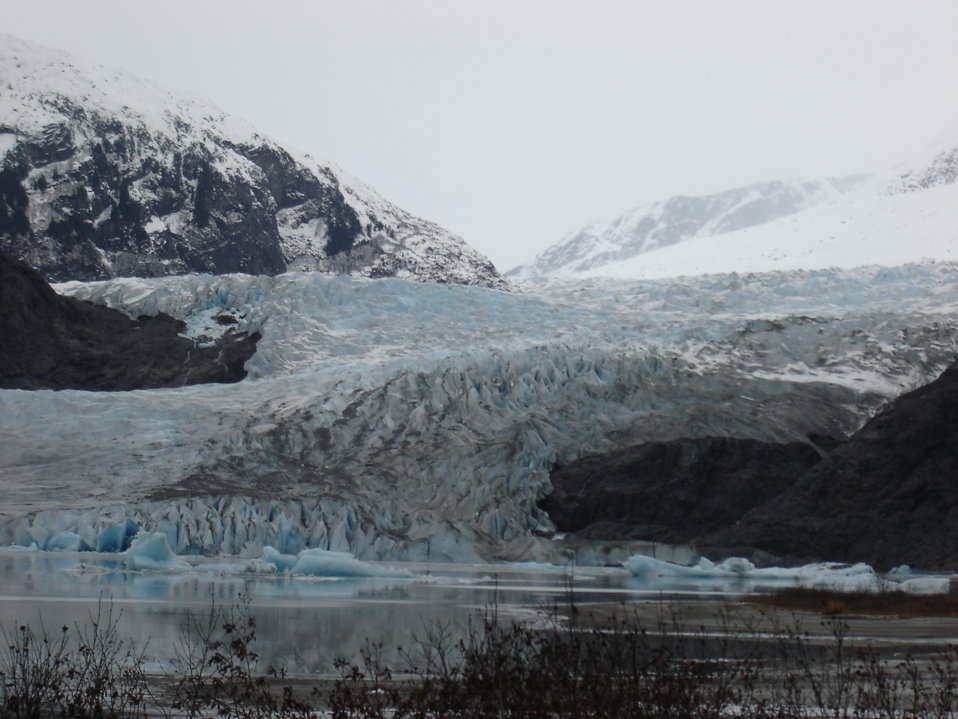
Mendenhall Glacier

The 1500-pound glacial ice coming to the October 23-24 Science Fair came from a calved piece of the Mendenhall Glacier, like these seen floating in Mendenhall Lake on the Juneau Ranger District of the Tongass National Forest.